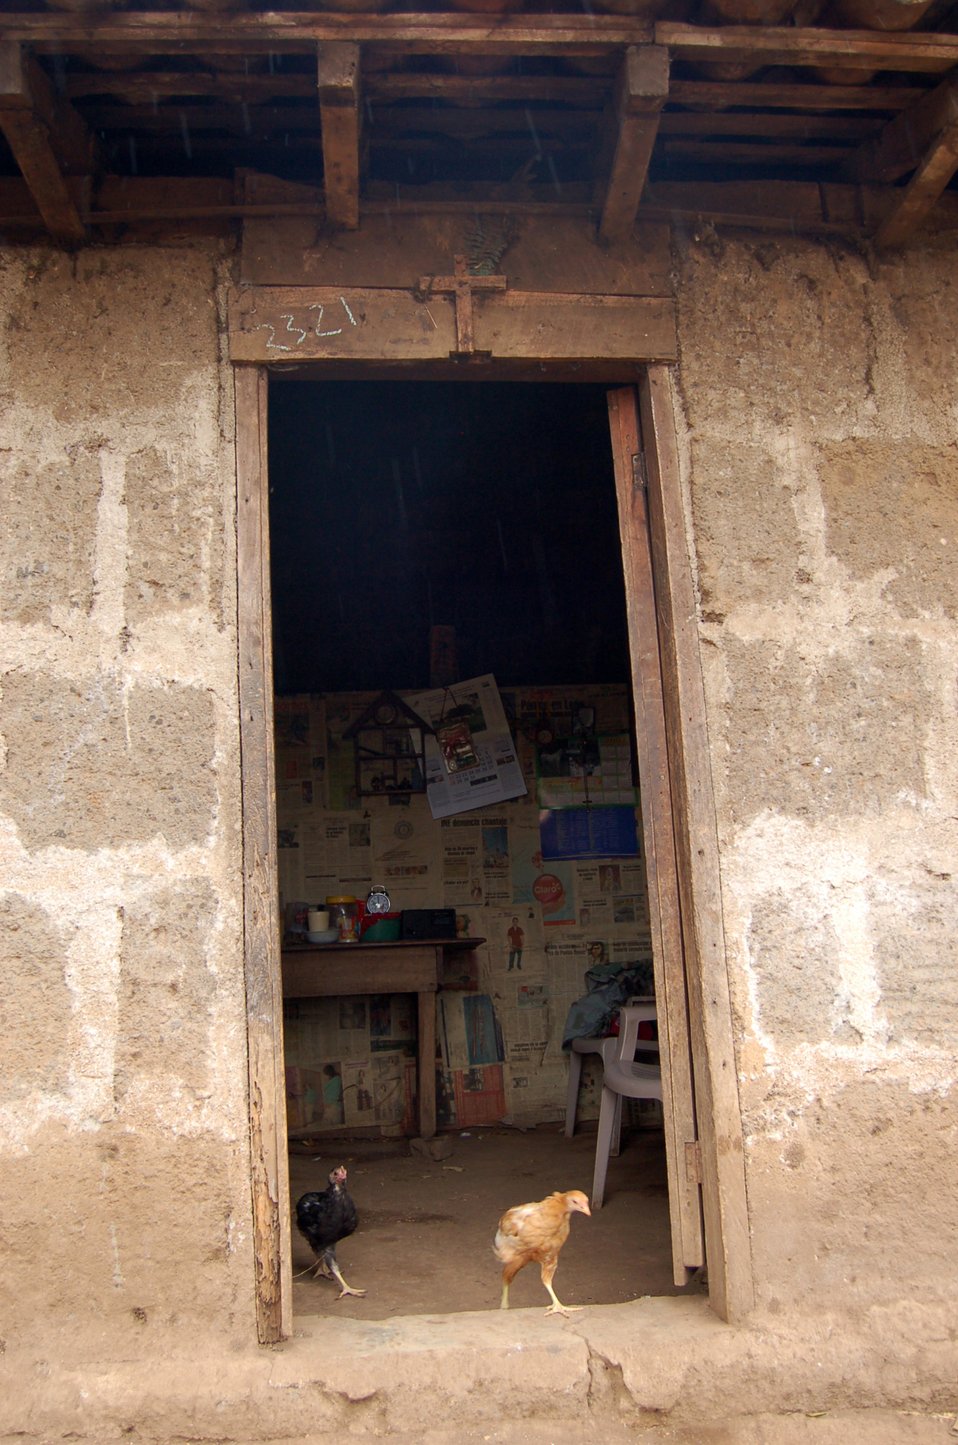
Nicaraguan lifestyle proves hard, offers valuable lessons

Chickens run out of Luisa Palacio-Cortez's front door, and a handmade cross offers blessings and welcome to those who cross the threshold.